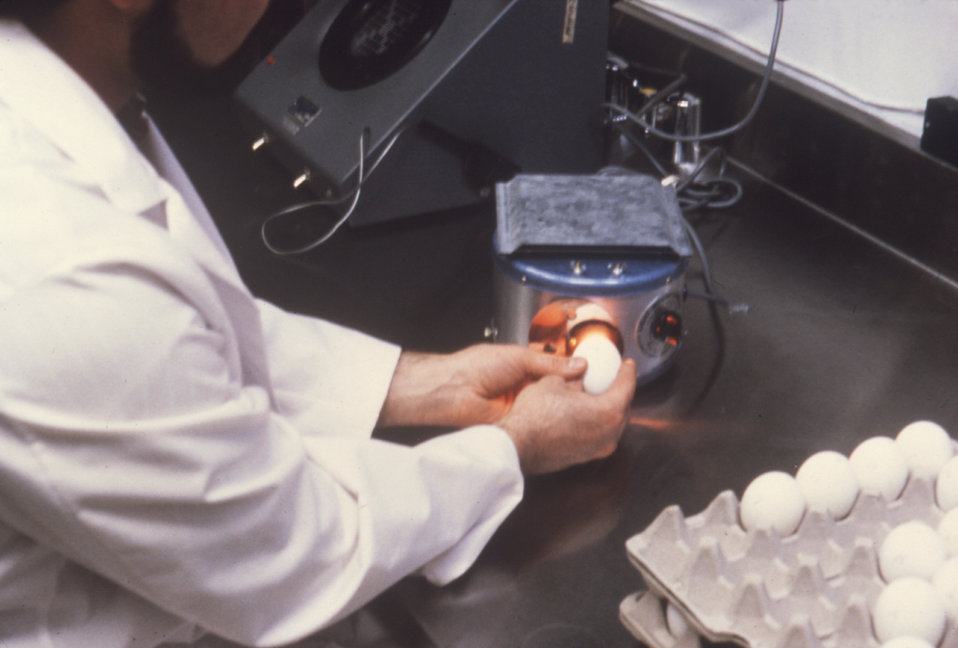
Here a technician is examining an embryonated chicken in order to determine the viability of the embryo inside.